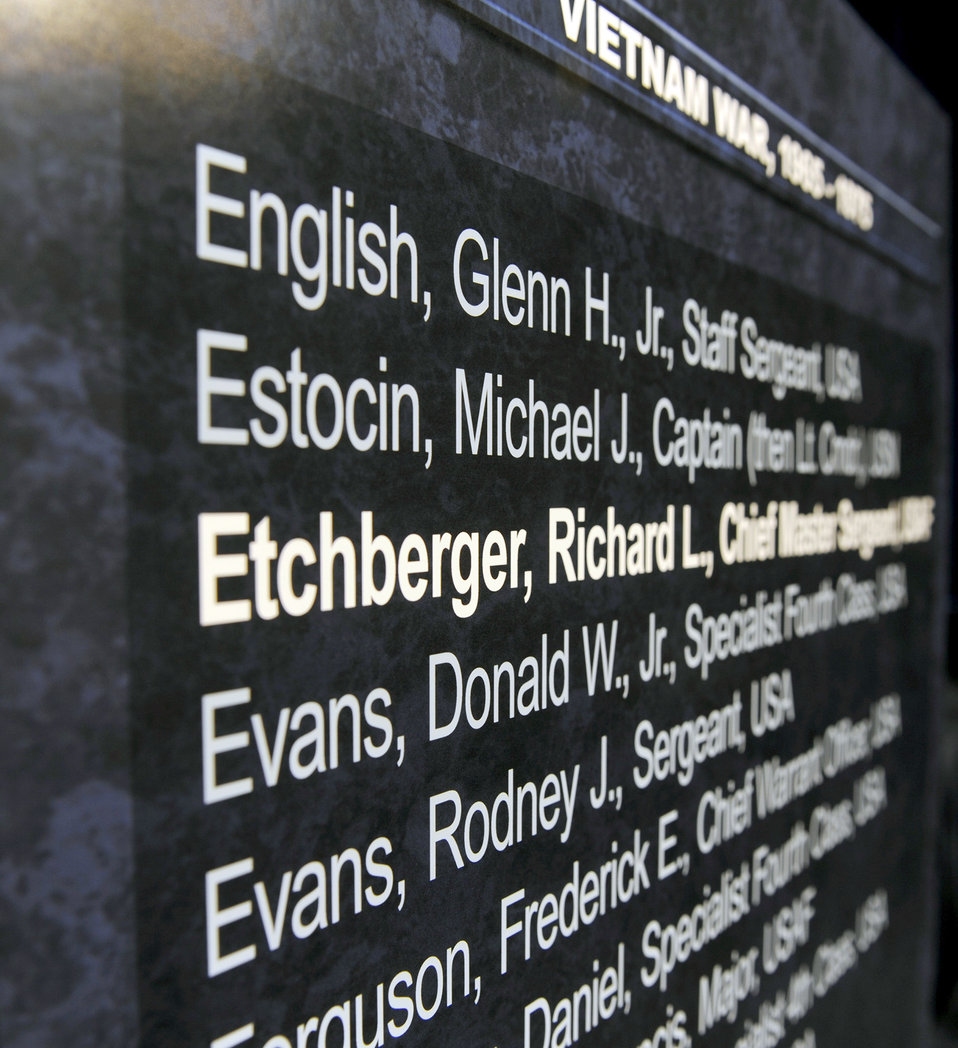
Hall of Heroes

Chief Master Sgt. Richard L. Etchberger's name is added to a Pentagon Hall of Heroes wall panel during an induction ceremony Sept. 22, 2010, in the Pentagon.